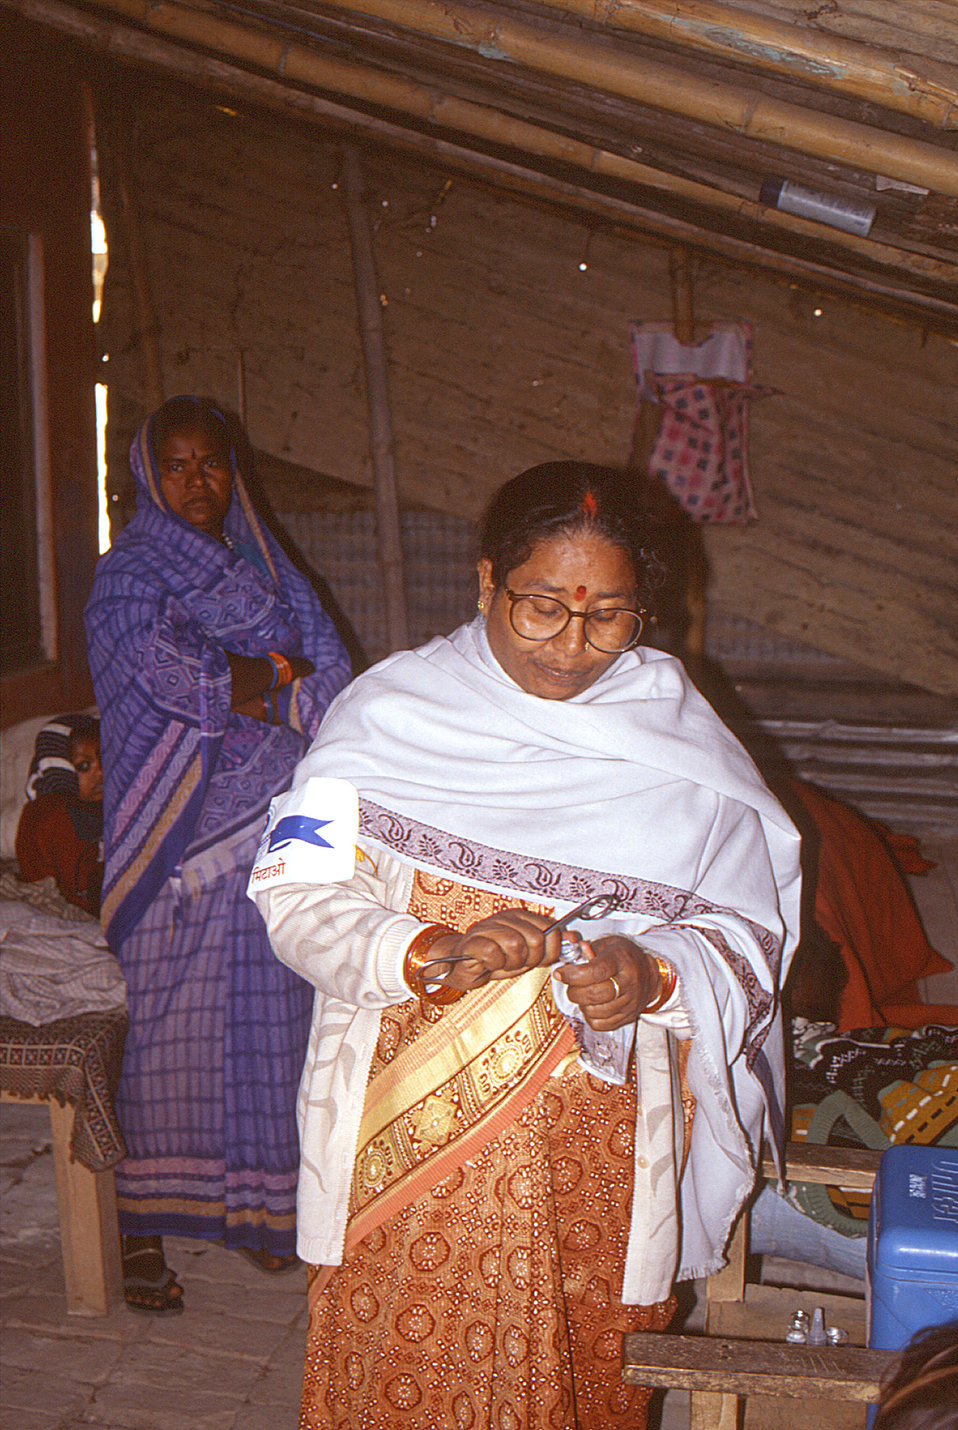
This 2000 photograph depicted a nurse as she was preparing to open a vial of polio vaccine that would be used in a clinical setting, during an Indian National Immunization Day (NID). This was one of a number of images provided by Chris Zahniser, B.S.N., R.N., M.P.H., a STOP Transmission of Polio (STOP) immunization initiative team member and photographer, who was assigned to the state of Uttar Pradesh in northern India, and spent three months working in the Districts of Gorakhpur and Deoria. Following each NID, health workers visited each home in a given District, in order to verify that all children under 5 years of age had received the polio vaccine. Written outside the door of this house would have been the dates indicating when the home had been visited, and that the children had been properly immunized.